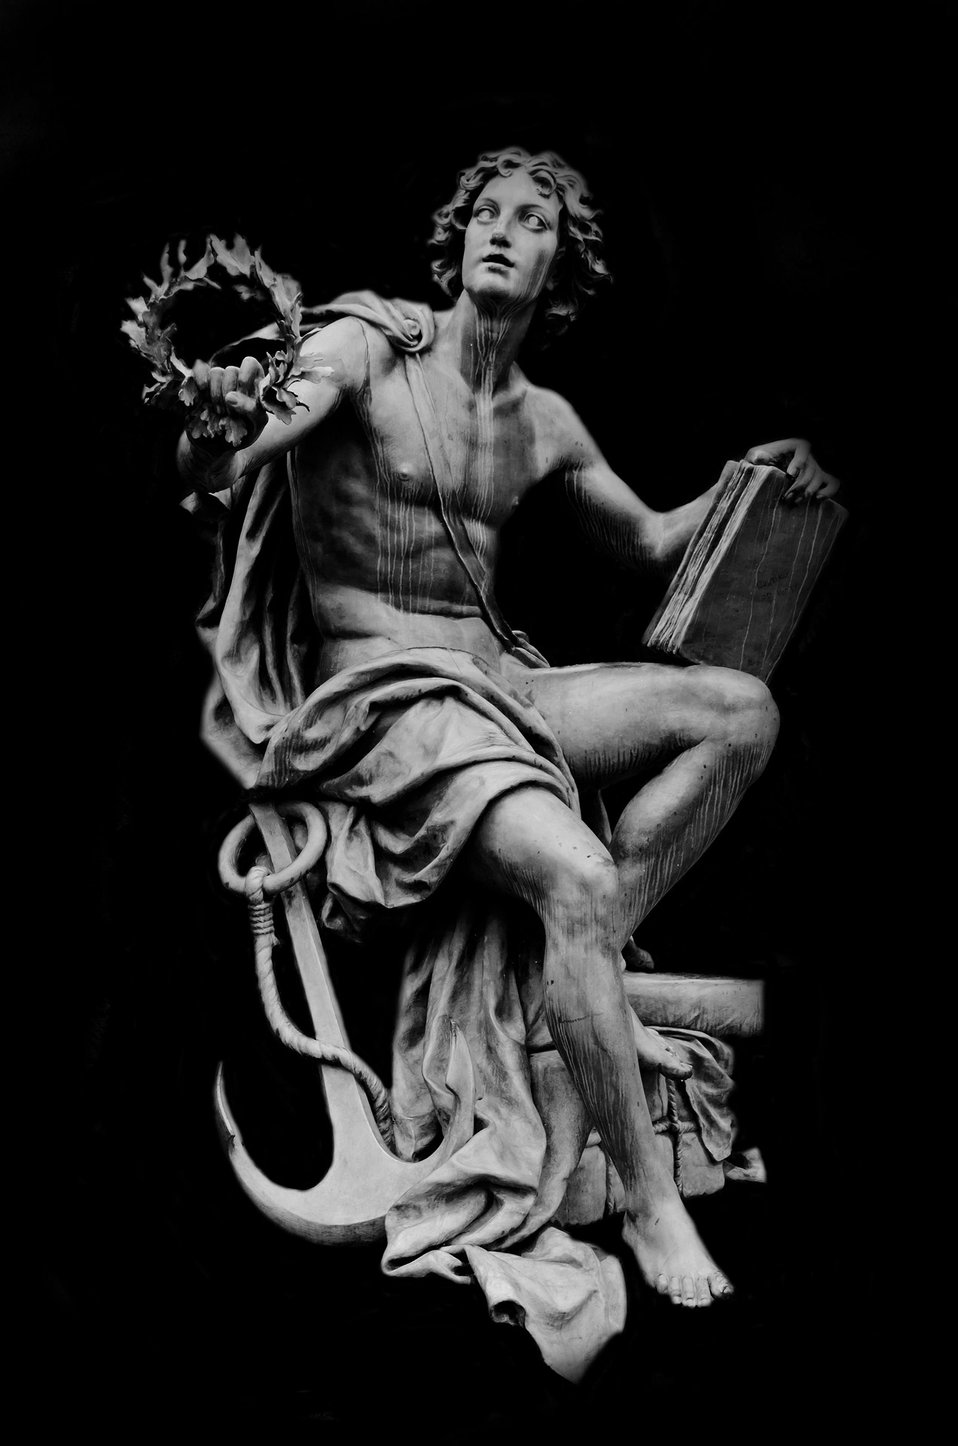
Old statue on black background.